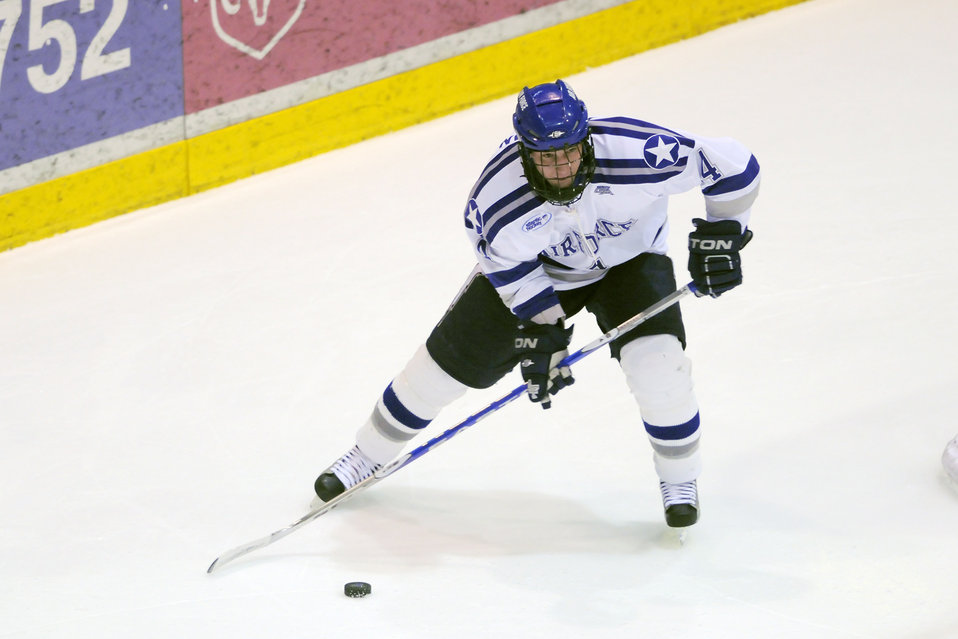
Falcons hockey team beats Pioneers

Falcon freshman Eric Artman sets up a pass as Air Force scored a season high eight goals, beating the Sacred Heart Pioneers 8-1 Feb. 27, 2010, at the U.S. Air Force Academy's Cadet Ice Arena. The victory clinched third place in the Atlantic Hockey Association, improving to 14-14-6 overall and 14-8-6 in the AHA..